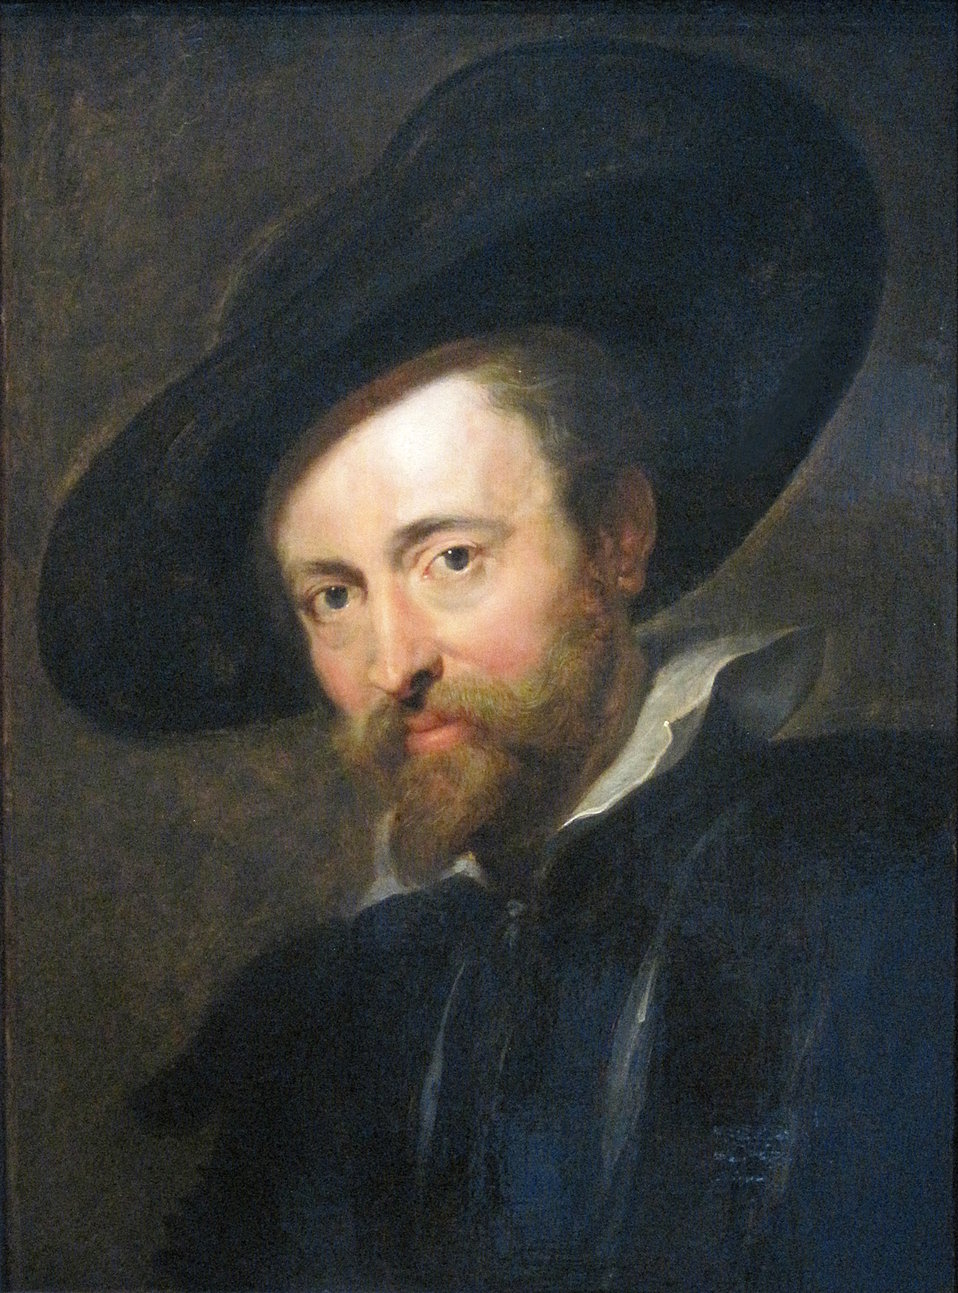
0 Autoportrait - P.P. Rubens - Rubenshuis - RH.S. 180 (1)